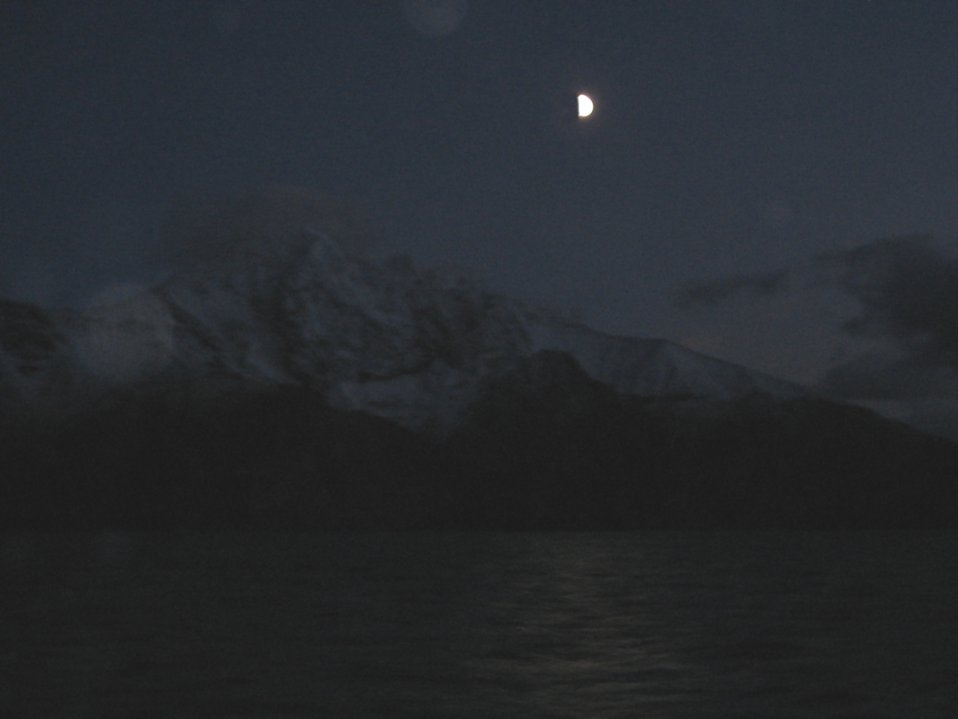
Night-time cruising in the Aleutian Islands. Moon beams reflecting off the water as mountains are barely perceptible in the distance.